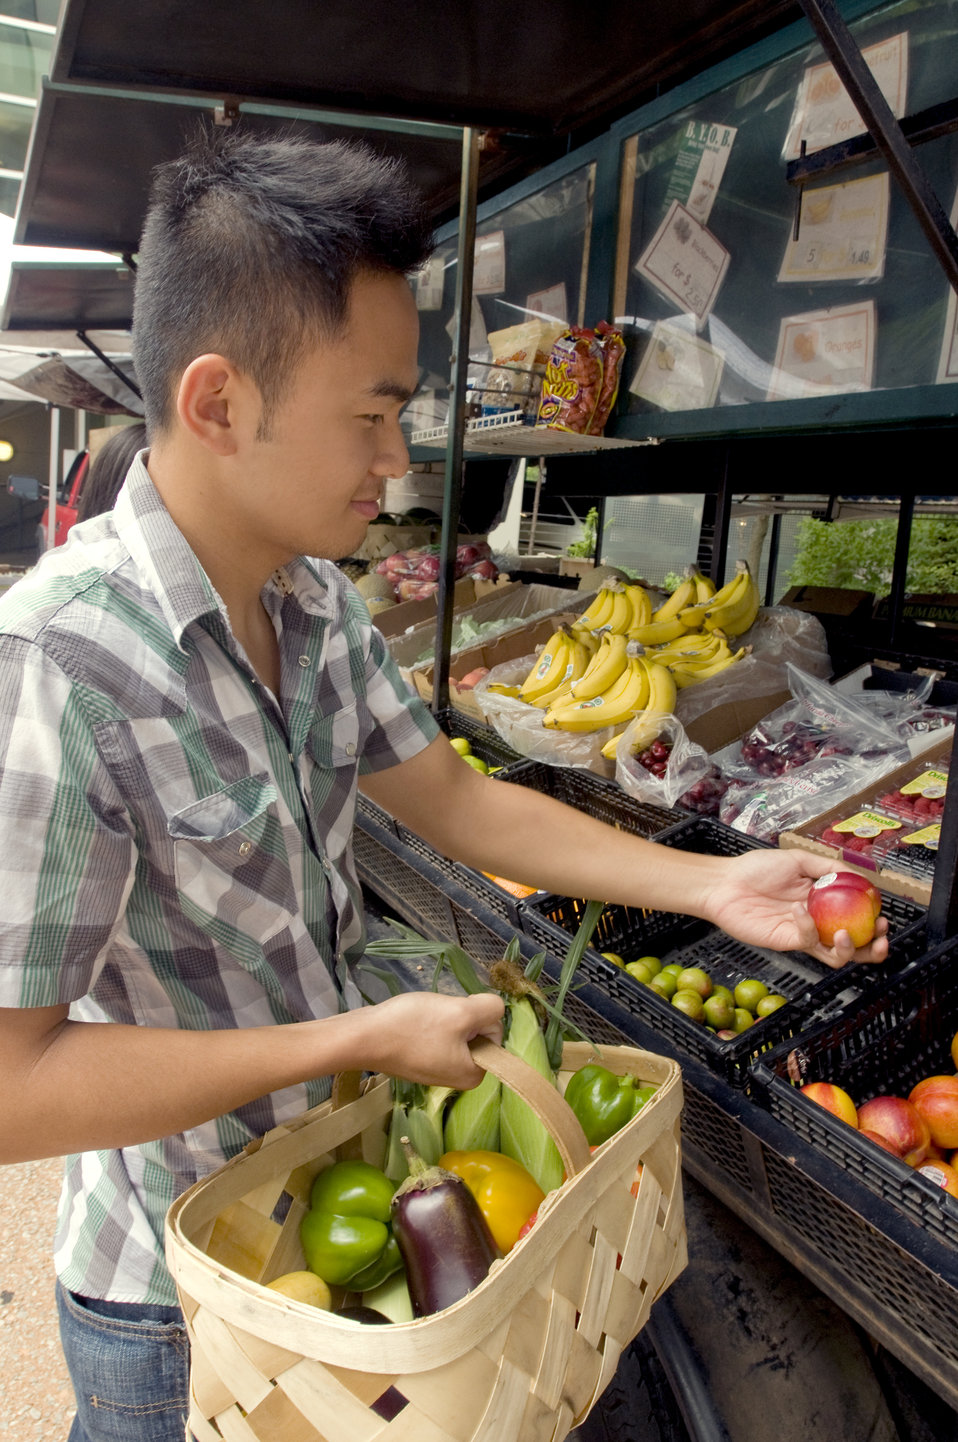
This man was photographed as he was shopping for groceries at a mobile Georgian farmers market at a point in his activity where he was about to choose from a number of red-orange nectarines in the market's produce section.